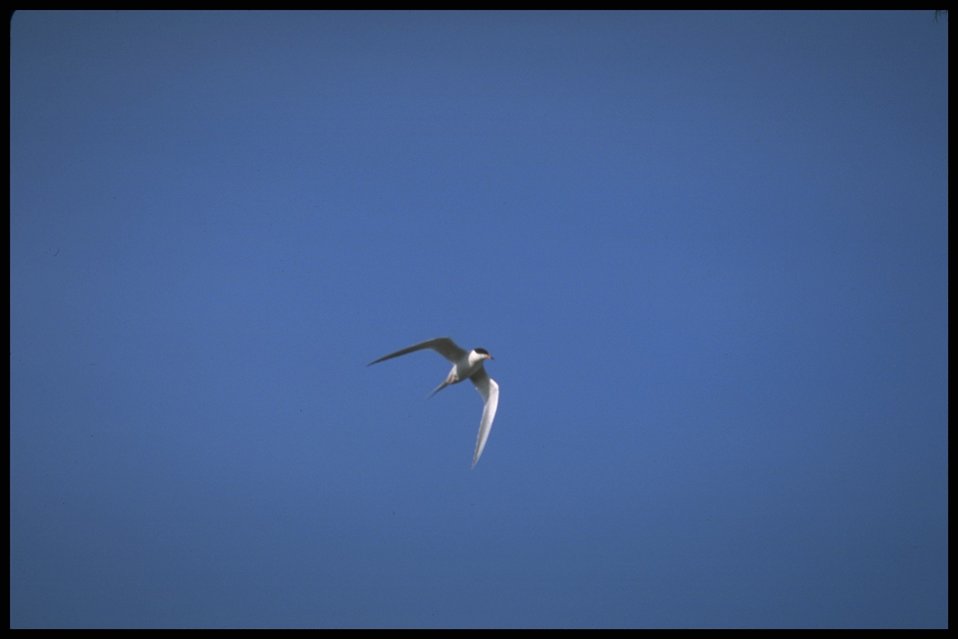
Far shot of Tern in flight, Lakeview District.